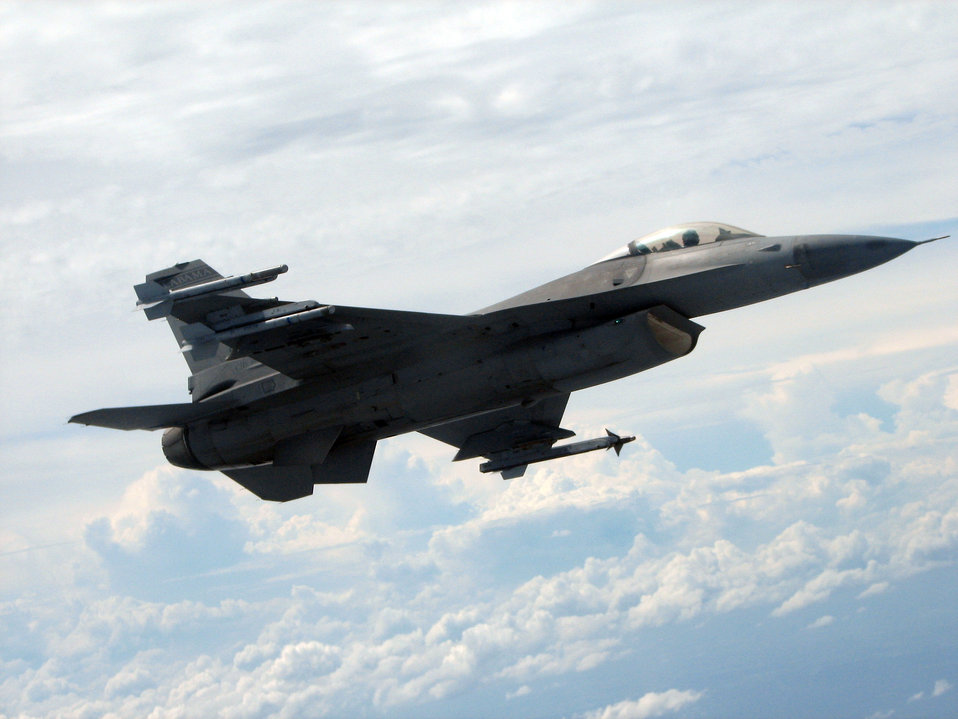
Military appreciation

AUBURN, Ala. -- An F-16 Fighting Falcon flown by Capt. Mike McGinn is performing a fly-over here Sept. 24 in support of military appreciation day and the Air Force anniversary. Captain McGinn is from the Alabama Air National Guard's 187th Fighter Wing in Montgomery, Ala.